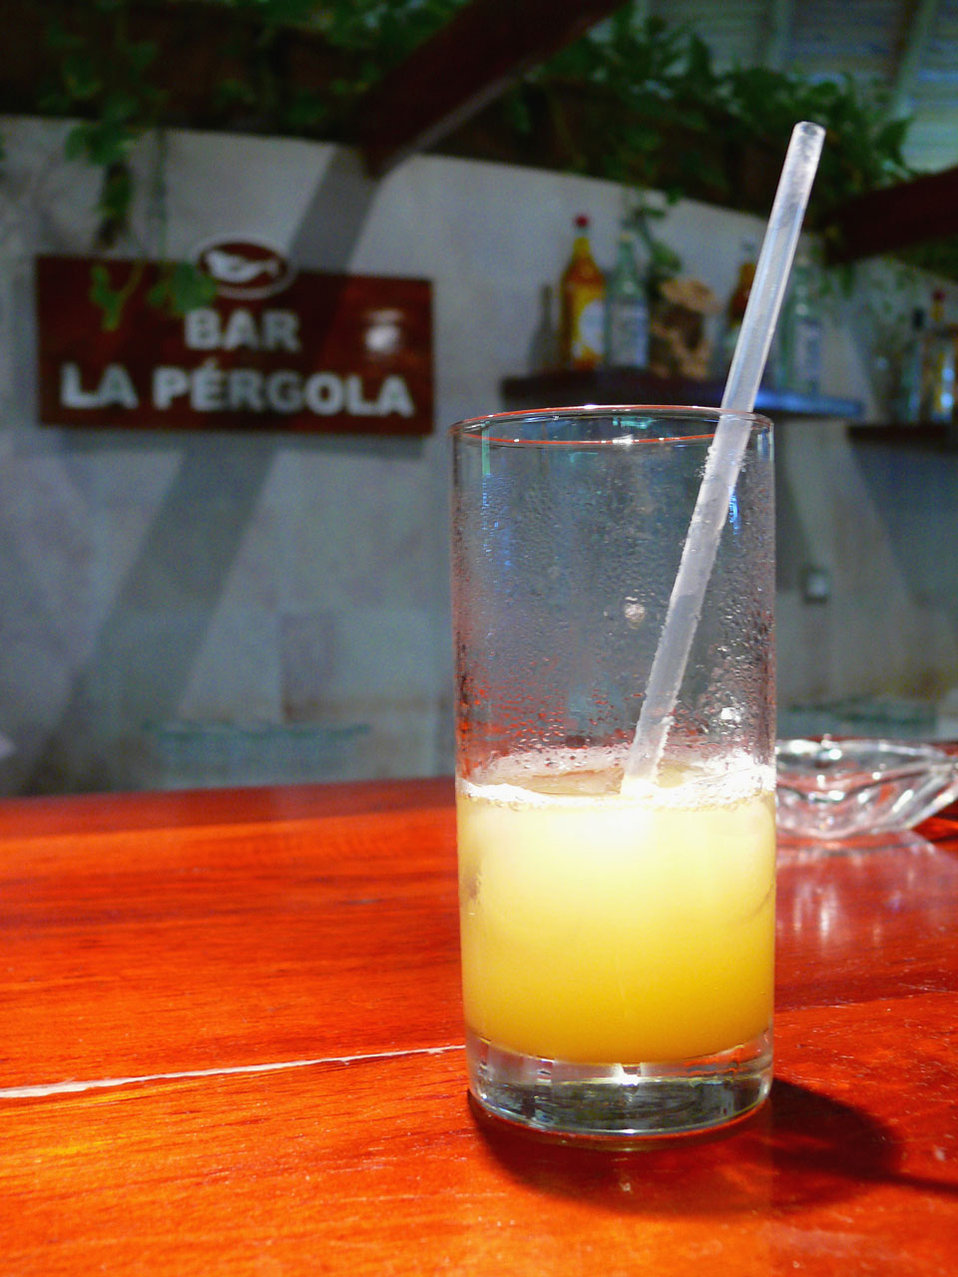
Drink on the table.